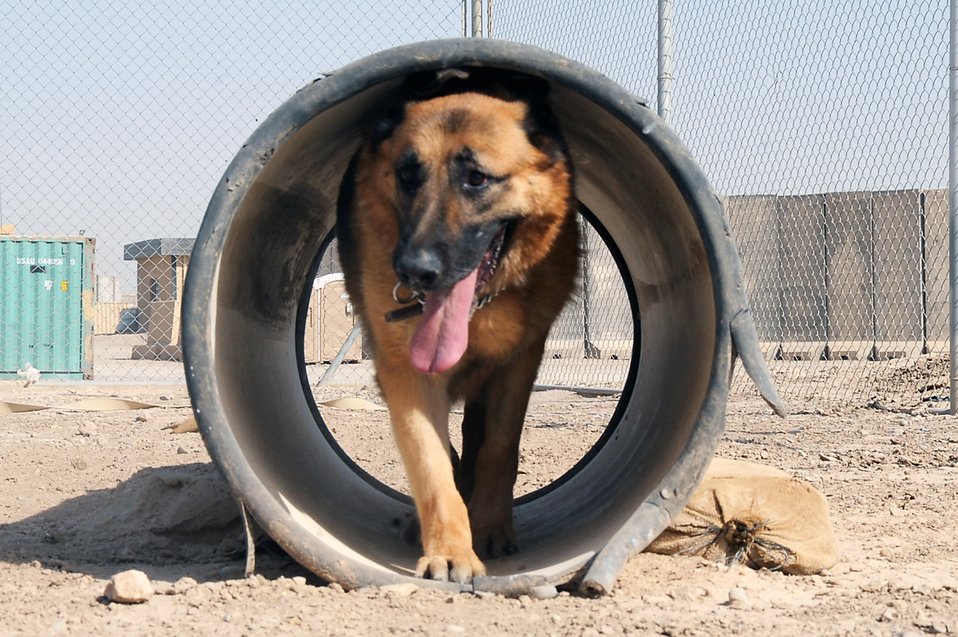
Ali Airmen mourn loss of K-9 team member

Goro trains July 7 at Ali Base, Iraq. The 8-year-old military working dog with the 407th Provost Marshal Office deployed here June 27 and died July 28 of natural cuases. This was his sixth deployment. Goro was deployed from Ramstein Air Base, Germany, with his handler Staff Sgt. Sean Neisen.